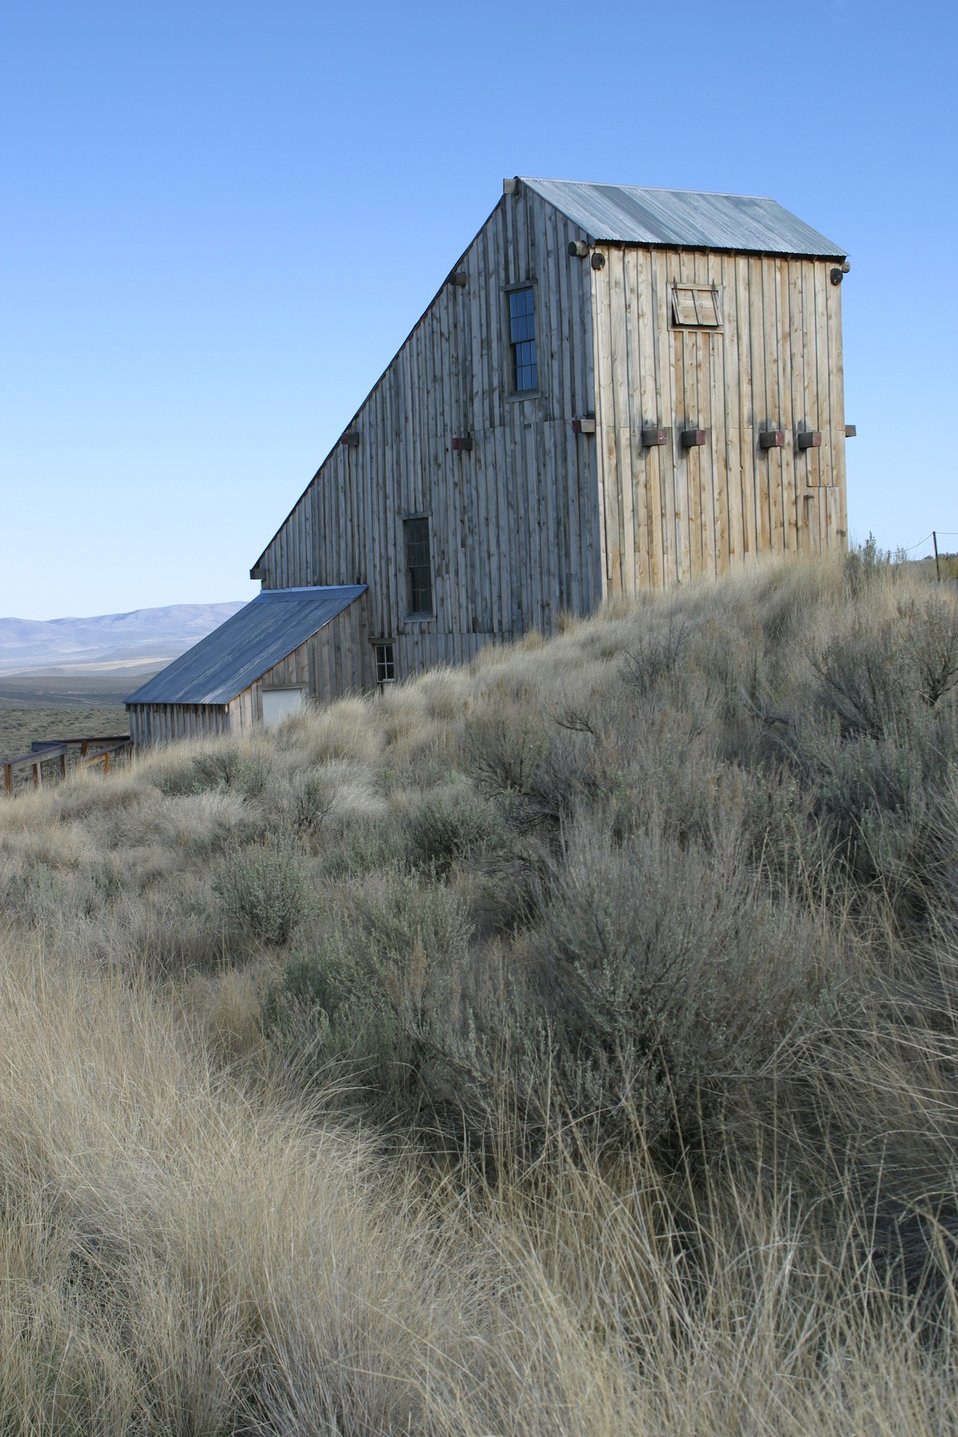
A replica of the Rabbit Mine 1926 stamp mill near Greenhorn in the Blue Mountains of eastern Oregon. It is used to interpret the importance of mining in western history, and the relationship of gold mining to the westward migration story.